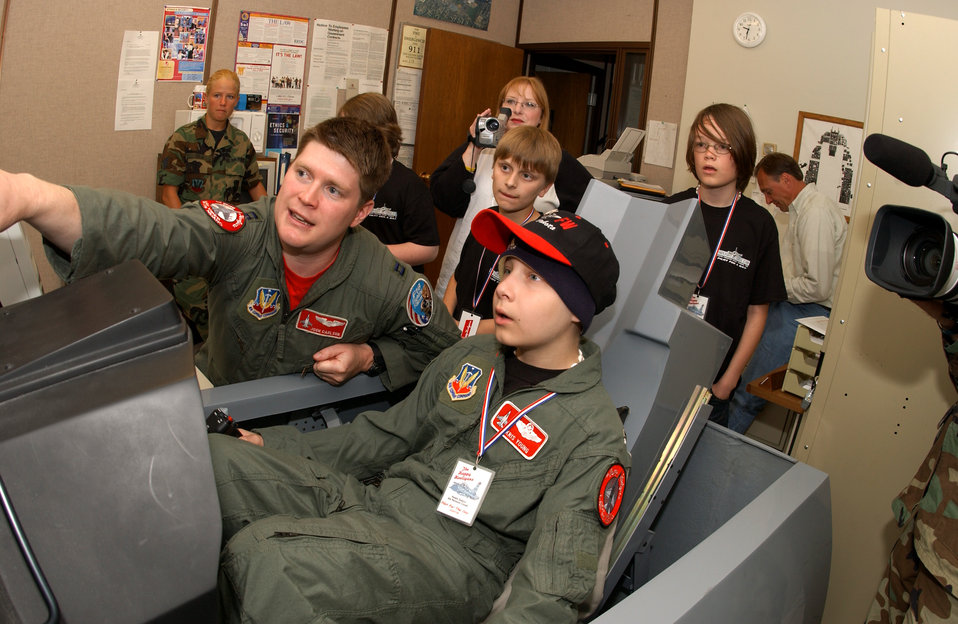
Pilot for a day

Capt. Joshua Carlson helps